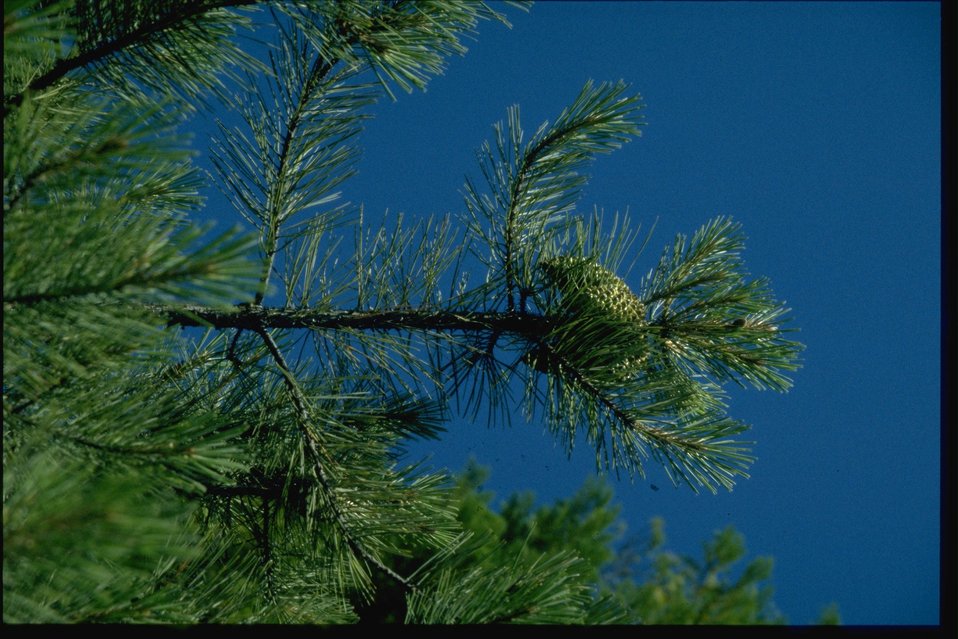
Farshot of Knobcone Pine, Pinus attenuata.